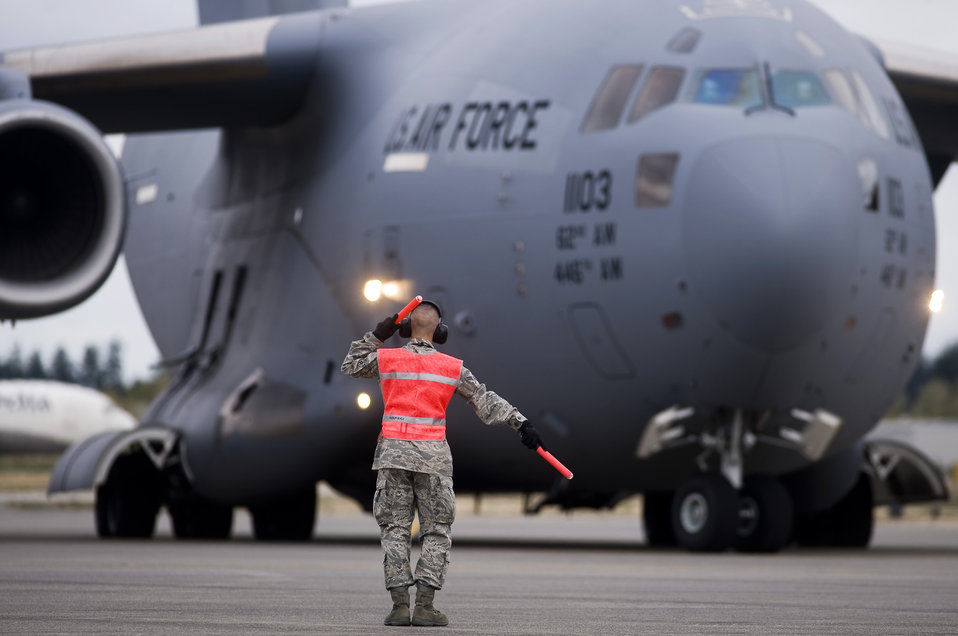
McChord Airmen fly response team to American Samoa

Airman Basic Ruben Rojas marshals a C-17 Globemaster III on the flightline Oct 1, 2009, at McChord Air Force Base, Wash. In the wake of a 7.6 magnitude undersea earthquake that caused a devastating tsunami to strike American Samoa, McChord AFB Airmen deployed a U.S.-based Federal Emergency Management Agency team to the region. Airman Rojas is assigned to the 62nd Aircraft Maintenance Squadron.